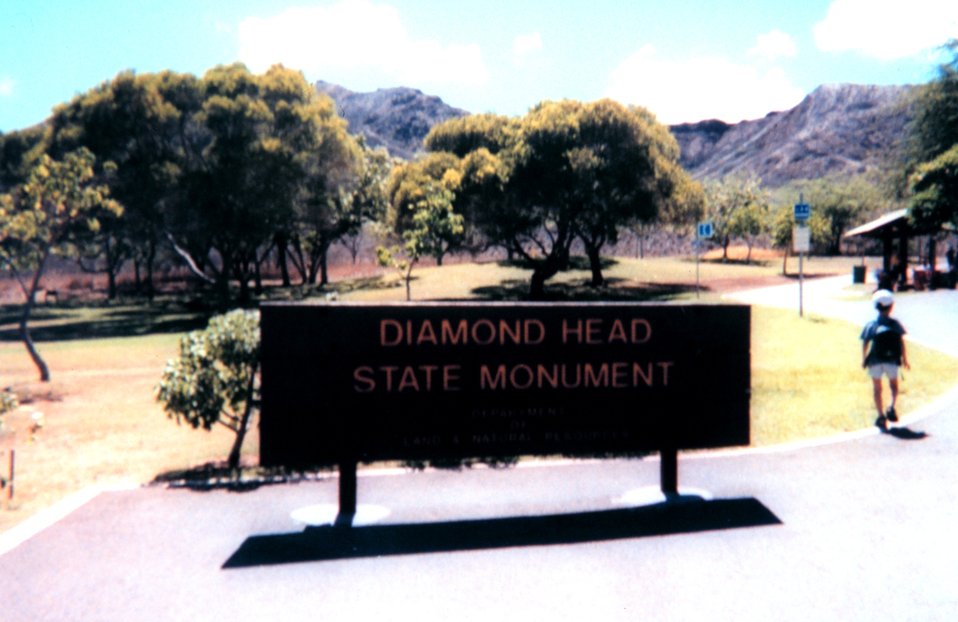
In the crater at Diamond Head State Park.